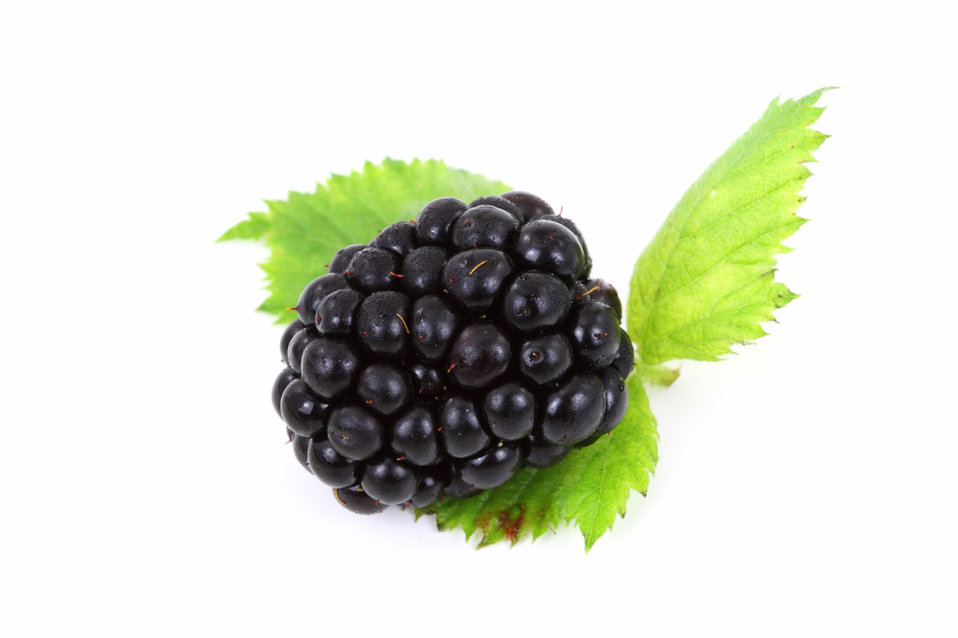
Blackberry

Fresh blackberry isolated on white background.